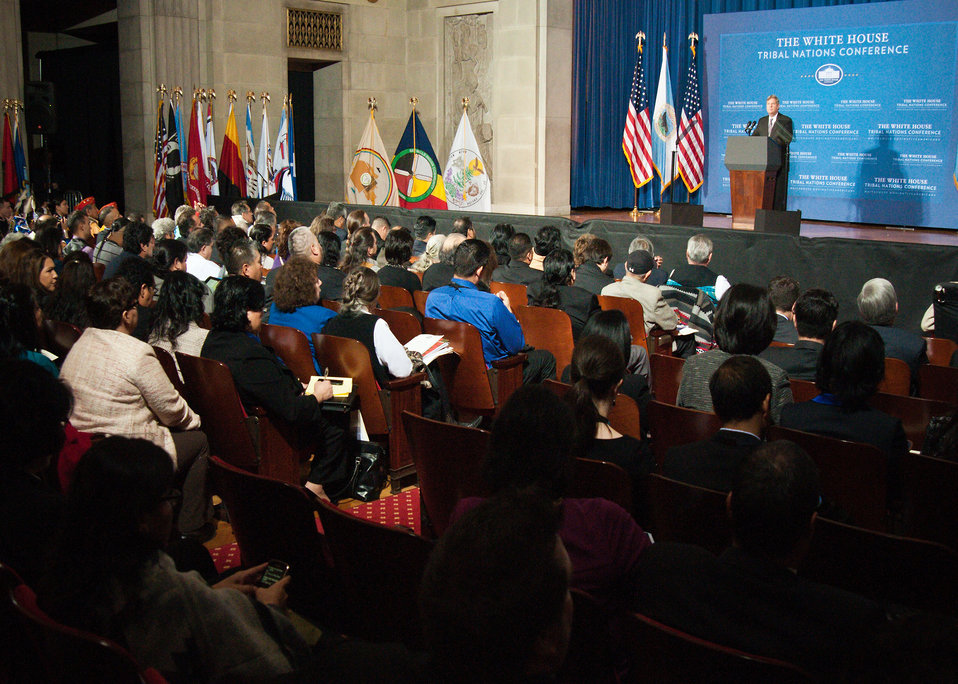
Agriculture Secretary Tom Vilsack speaks at the Fourth Annual White House Tribal Nations Conference at the U.S. Department of Interior in Washington D.C. on Wednesday, Dec. 5, 2012. Cabinet members Interior Secretary Ken Salazar, Agriculture Secretary Tom Vilsack, Education Secretary Arne Duncan, Treasury Deputy Secretary Neal Wolin, Commerce Acting Secretary Rebecca Blank, Health and Human Services Secretary Kathleen Sebelius discussed the gains and progress of the Obama Administration concerning Native American Tribal Nations.